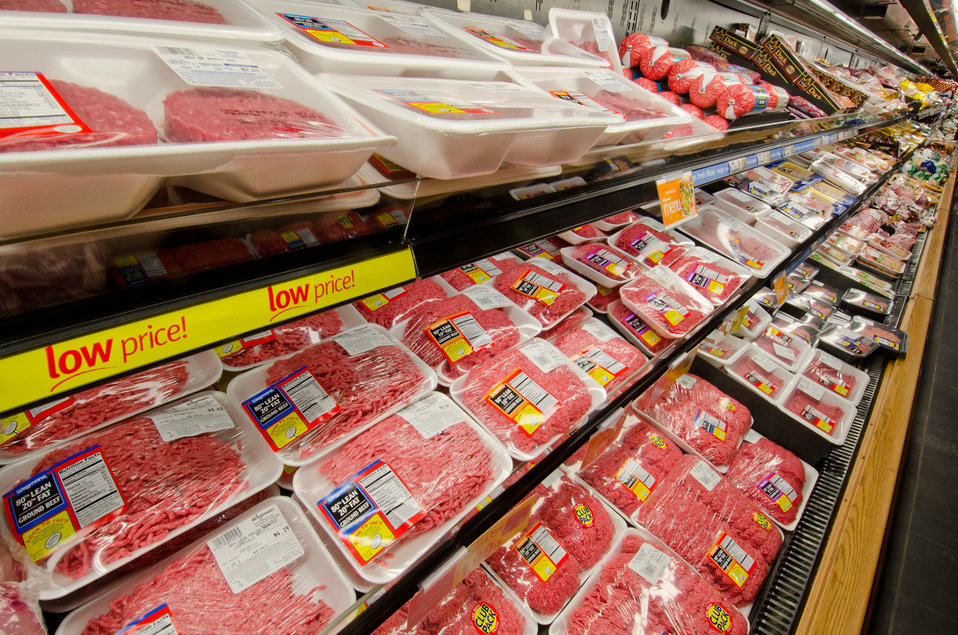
Ground beef meat products at a grocery store in Fairfax, Virginia, on March 3, 2011.